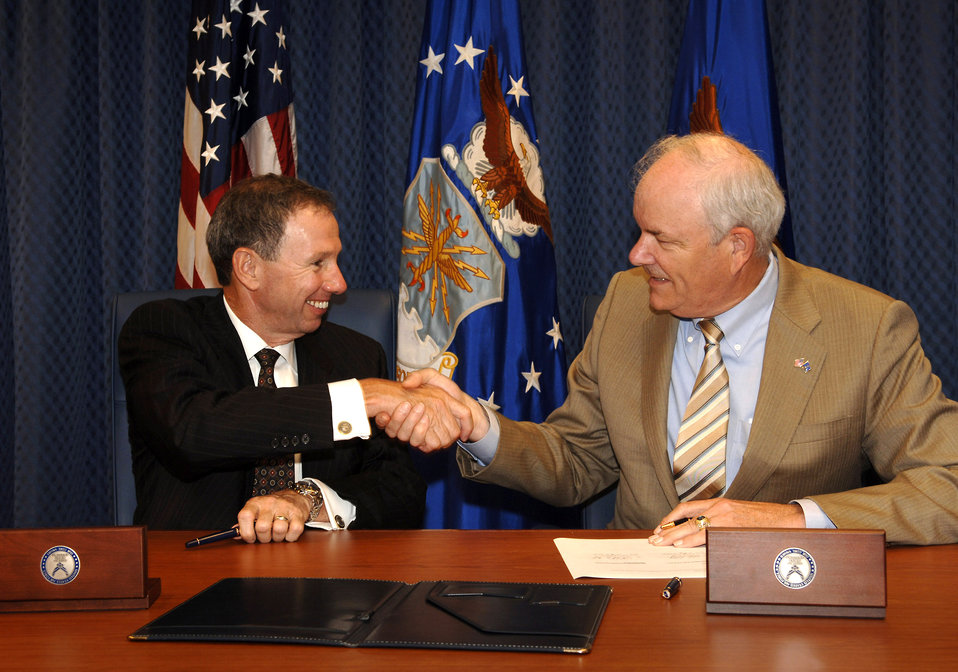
NASA, Air Force agree to aeronautics cooperation

NASA Administrator Michael Griffin (left) and Secretary of the Air Force Michael W. Wynne shake hands after signing a memorandum of understanding Aug. 7 at a Pentagon ceremony. The agreement builds upon and expands on the longstanding relationship between the two organizations.